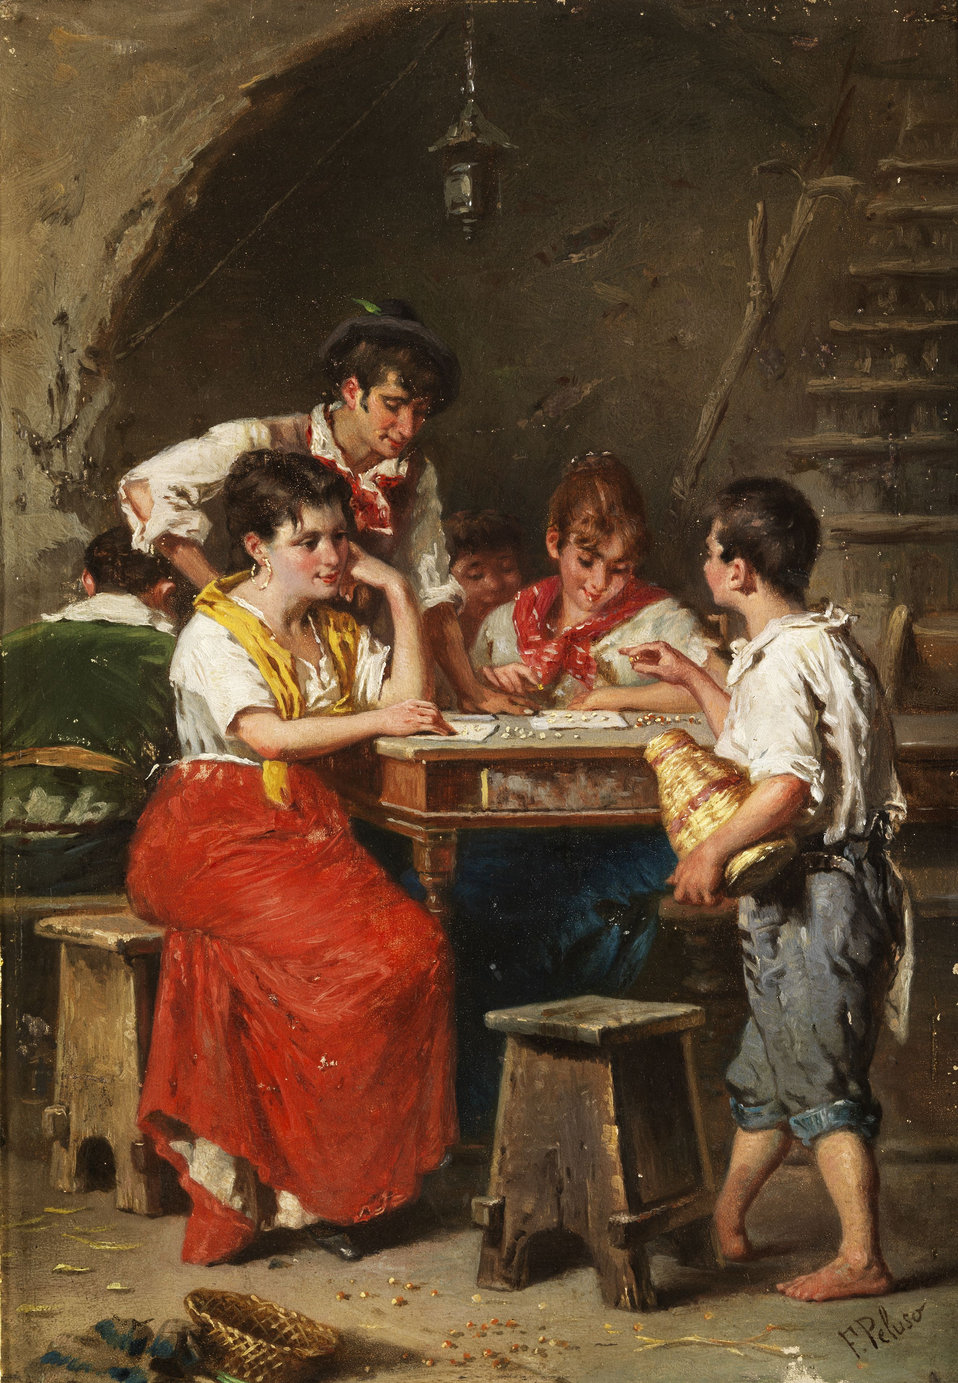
Francesco Peluso Familienszene